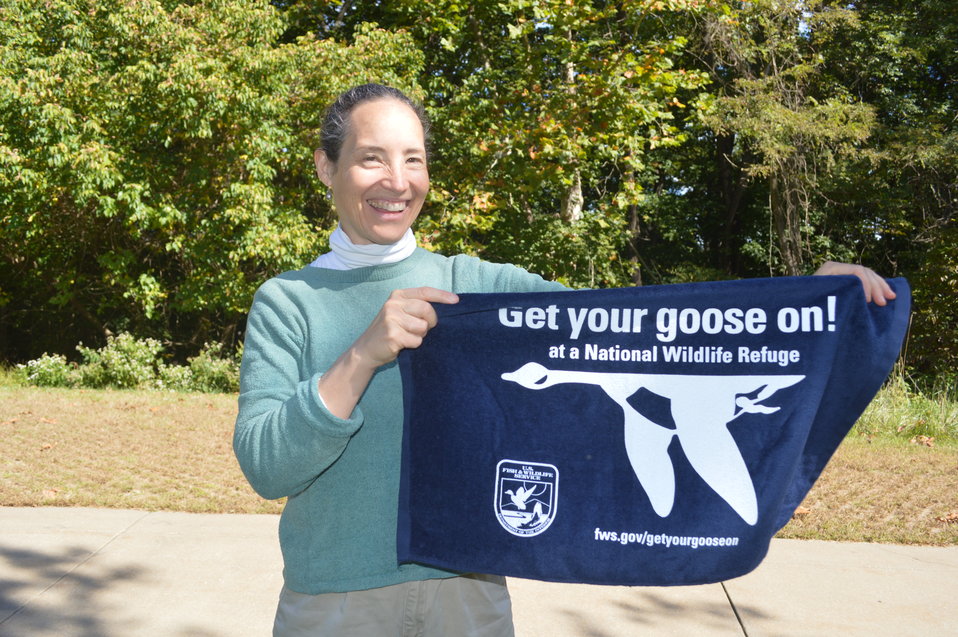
Get Your Goose On!

Photo taken at the National Conservation Training Center in Shepherdstown, WV.

Credit: Ryan Moehring / USFWS

#GetYourGooseOn